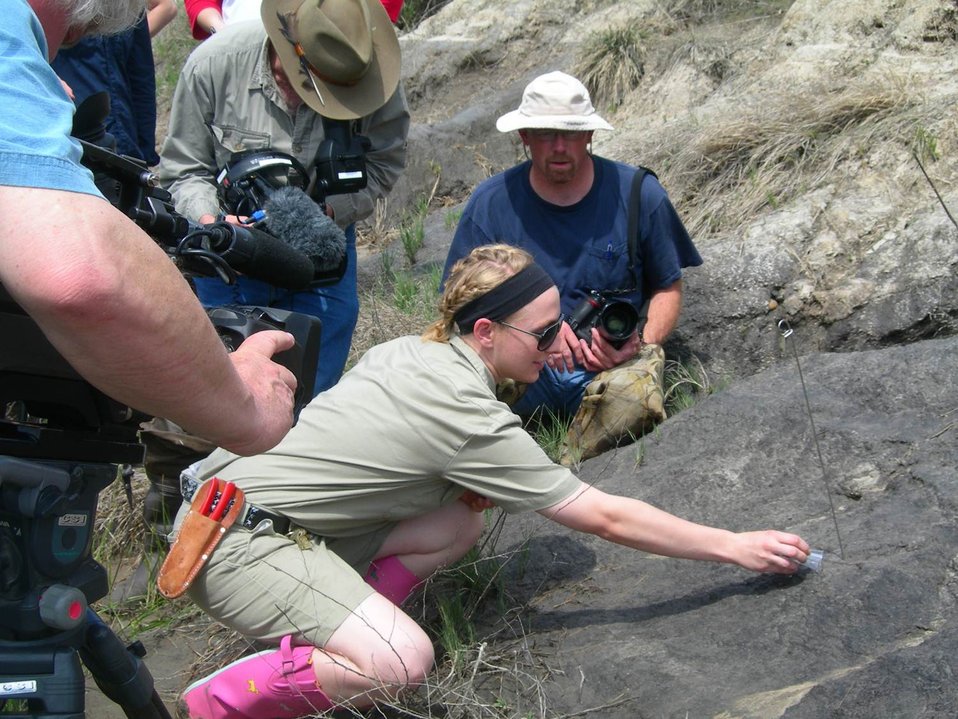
Salt Creek Tiger Beetle Larvae in Burrow

Meghan Welsh of the Henry Doorly Zoo releases Salt Creek tiger beetle larvae into suitable habitat by making an artificial burrow with the end of a paint brush and then gently nudging the larvae into the burrow. Since the U.S. Fish and Wildlife Service listed the beetle as endangered in 2005 due to significant population and habitat losses, efforts to conserve the species have involved propagation of larvae to supplement its wild populations and create new ones.